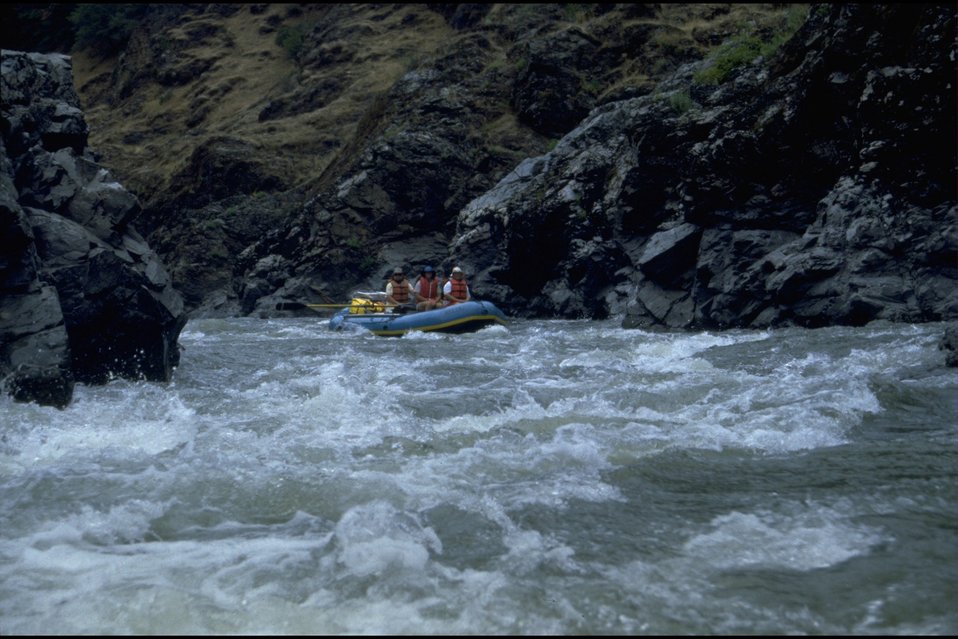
Rogue River - Mule Creek Canyon, wild section.